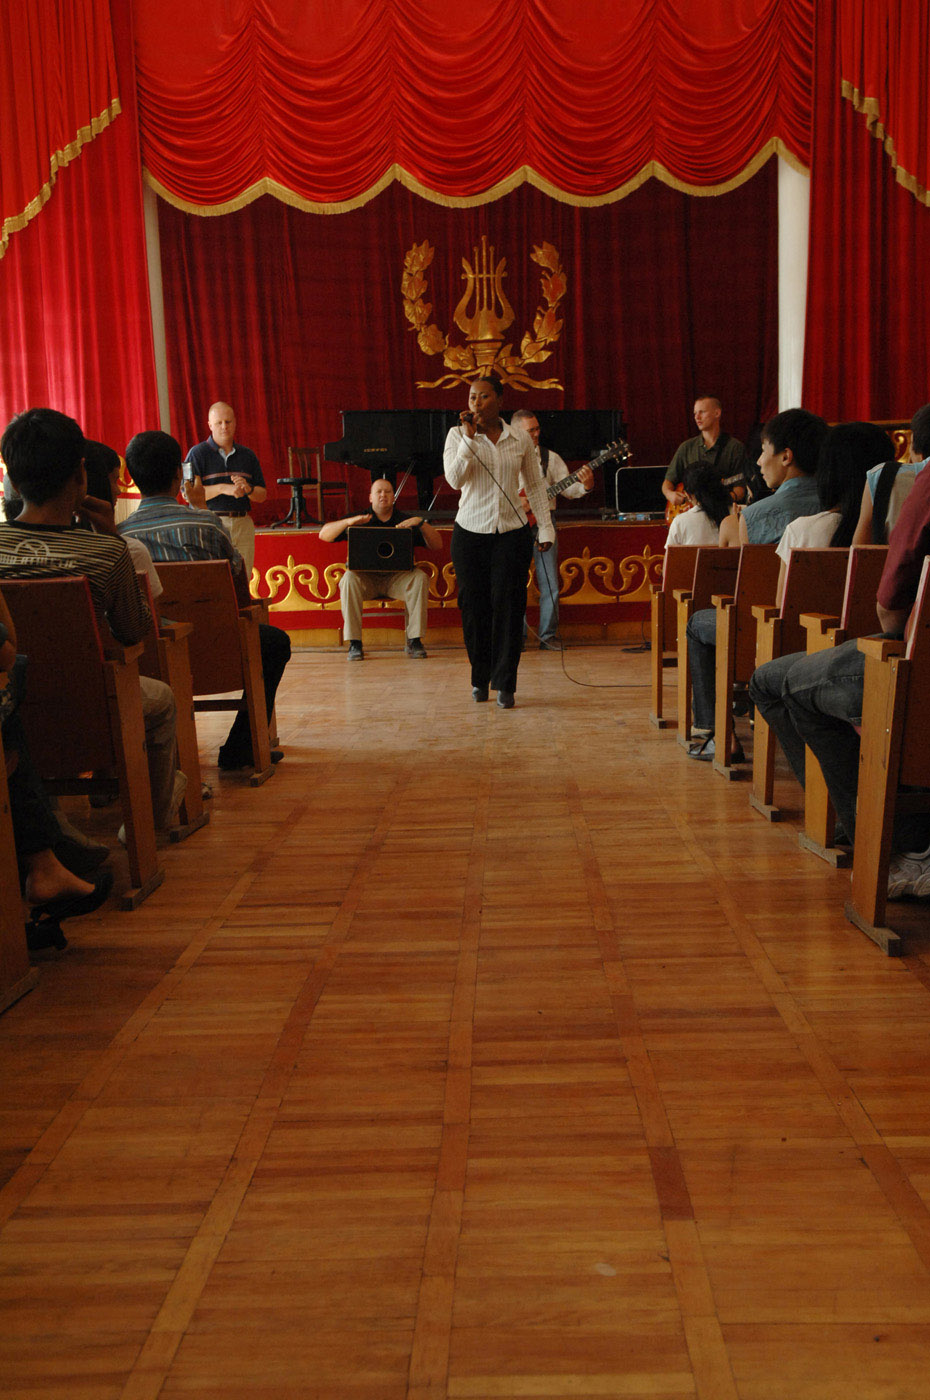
Band members, Kyrgyz citizens share culture through music

Master Sgt. Regina Coonrod performs in front of nearly 200 students Sept. 10 at the Bishkek Musical College in Krygyzstan. During their eight-day tour at Manas, the U.S. Air Forces Central Band Yuma performed 10 concerts at local schools, villages and orphanages, as well as on base for coalition servicemembers.